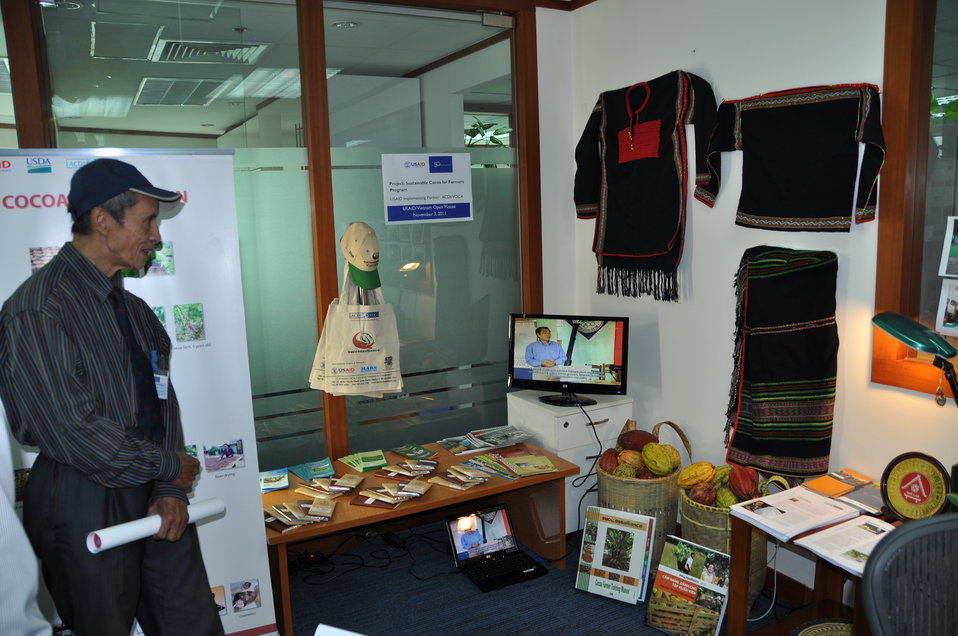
USAID Vietnam Open House 50th Anniversary, Hanoi